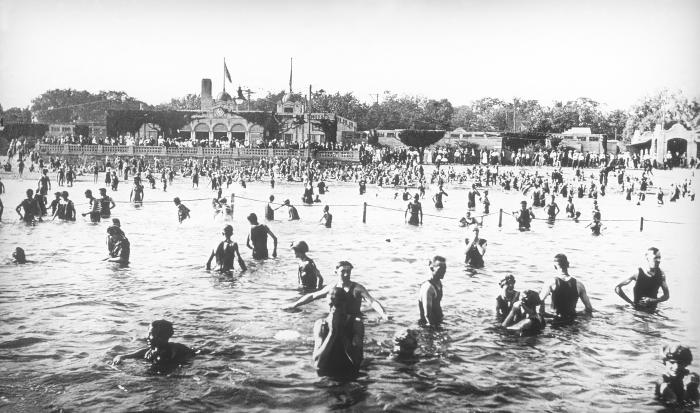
This 1917 photograph depicted a gathering of swimmers at the Lake Calhoun public bathing beach in Minneapolis, Minnesota. This image offered a view of the pavilion and beach area. It was taken during a Minnesota Department of Health study of the public bathing areas.